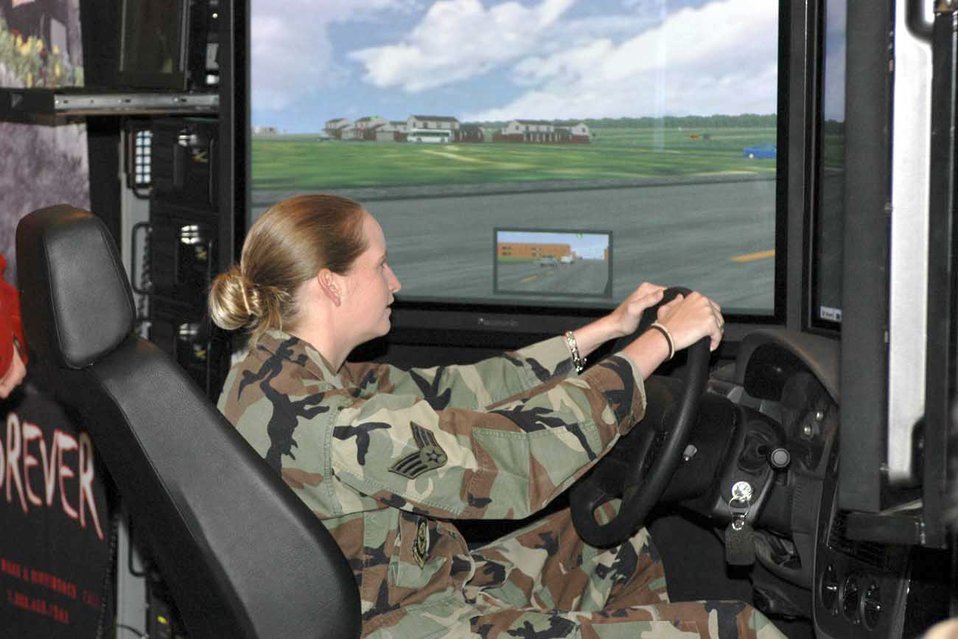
Airmen drive 'drunk'

TRAVIS AIR FORCE BASE, Calif. (AFPN) -- Senior Airman Jacqueline Johns drives the drunk-driving simulator. The simulator is part of the Save-A-Life tour and gives people a first-hand experience of driving under the influence. Airman Johns is assigned to the 60th Air Mobility Wing Command Post.